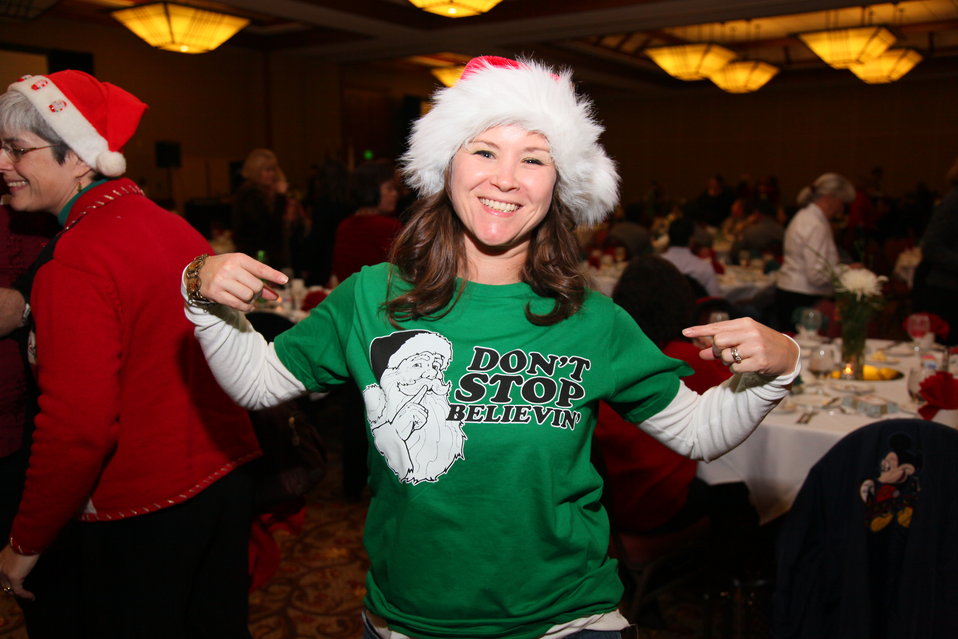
Sacramento District Holiday Party 2011